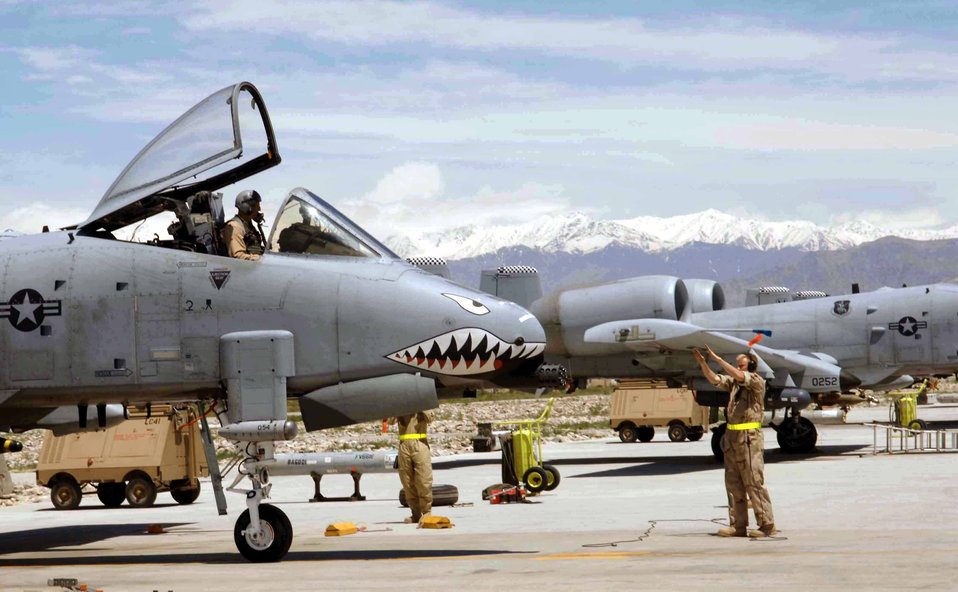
Final approach

BAGRAM AIR BASE, Afghanistan -- Lt. Col. Jeff Cowan parks an A-10 Thunderbolt II on the flightline here. He and other Airmen from the 74th Fighter Squadron at Pope Air Force Base, N.C., recently arrived for an air and space expeditionary force rotation. Colonel Cowan is the squadron's commander.